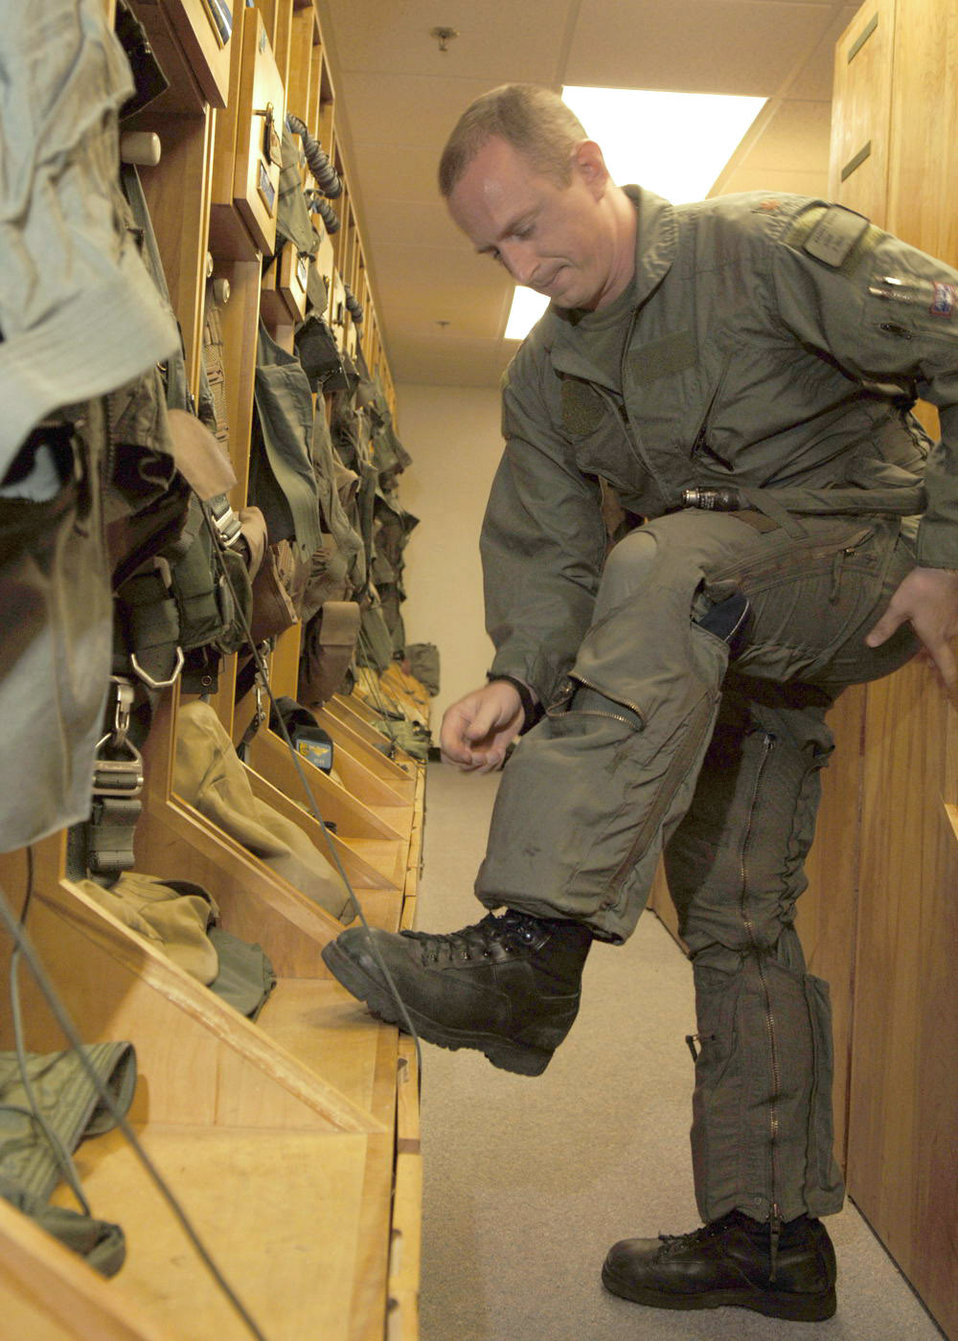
Thunderbolts on duty

Maj. Steven Raspet gears up before going out to his A-10 Thunderbolt II at Davis-Monthan Air Force Base, Ariz., on July 7. Major Raspet is assigned to the 354th Fighter Squadron and was recently deployed to Bagram Air Base, Afghanistan, in support of Operation Enduring Freedom